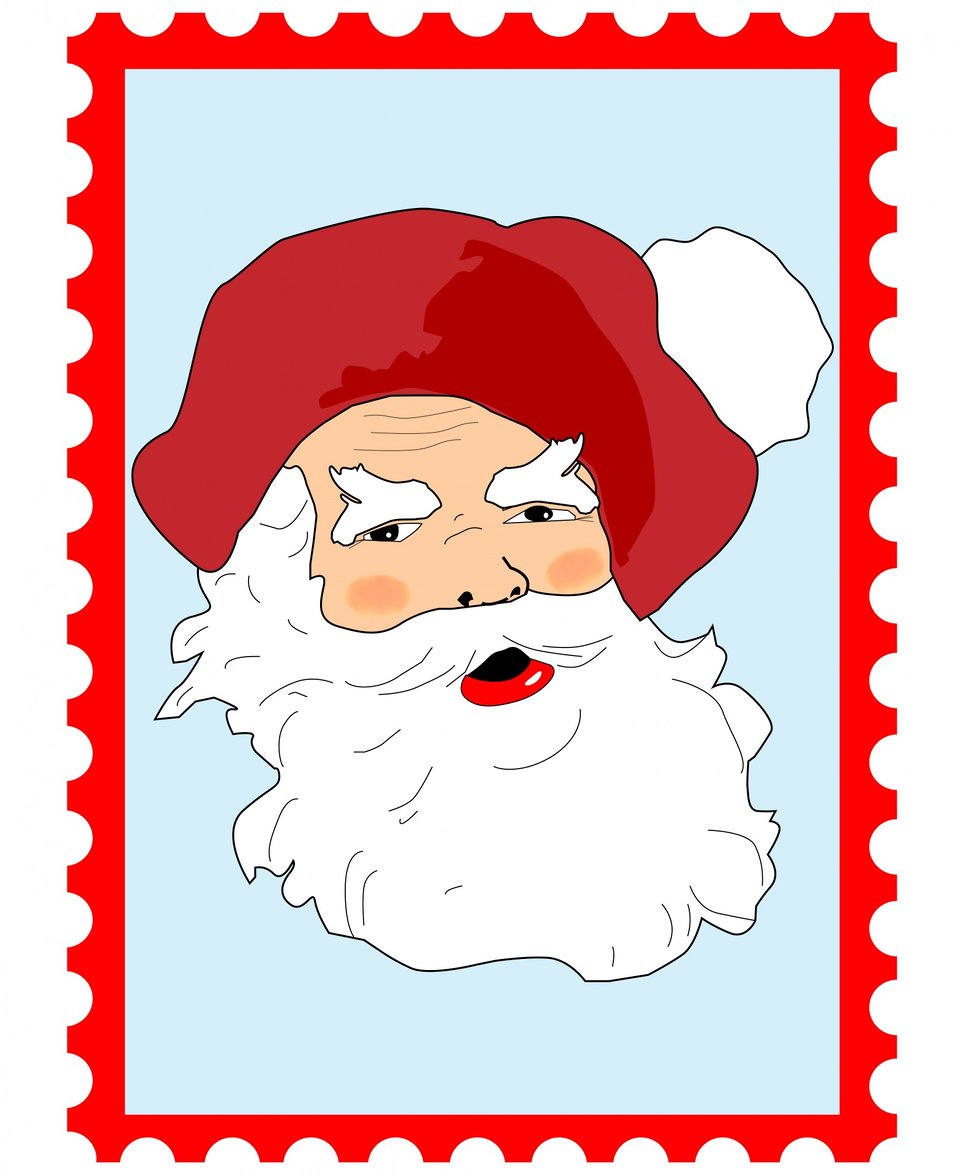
Santa claus christmas postage

Vintage santa claus christmas postage stamp.